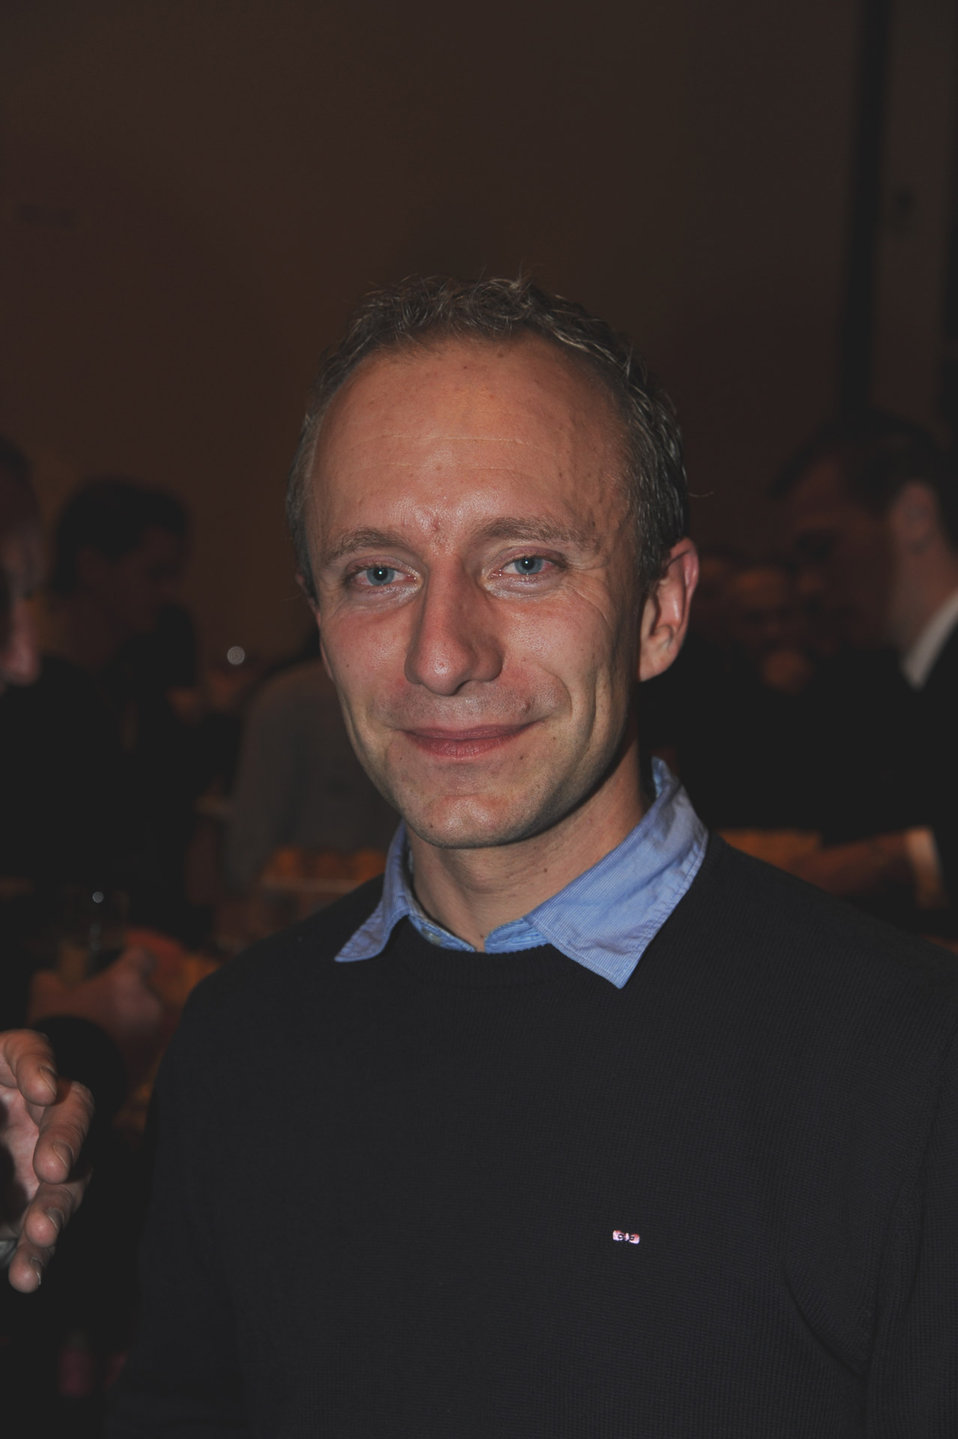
Portrait 2012.